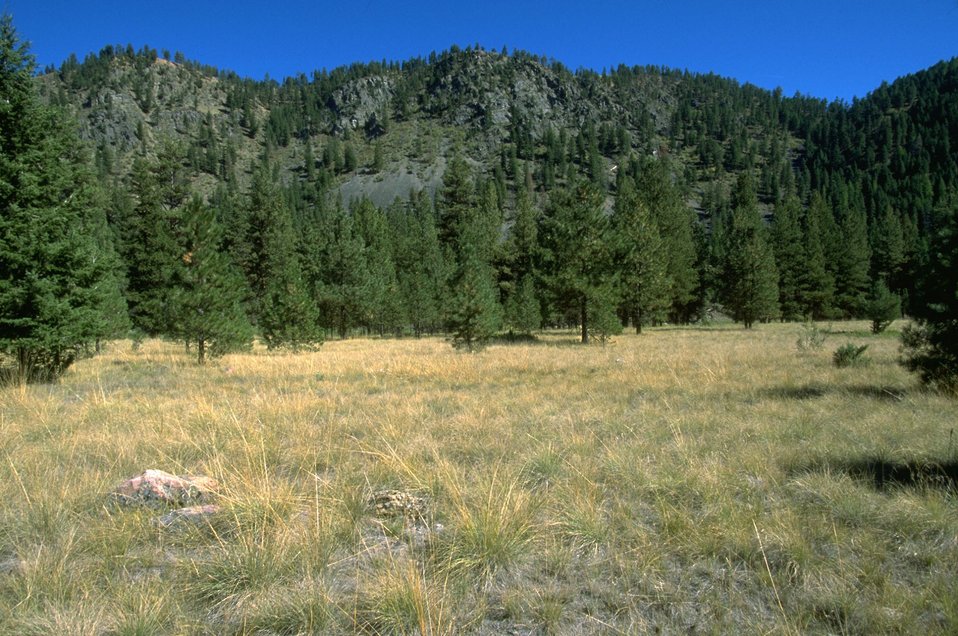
Blackfoot River bank with Ponderosa pine and bunch grass